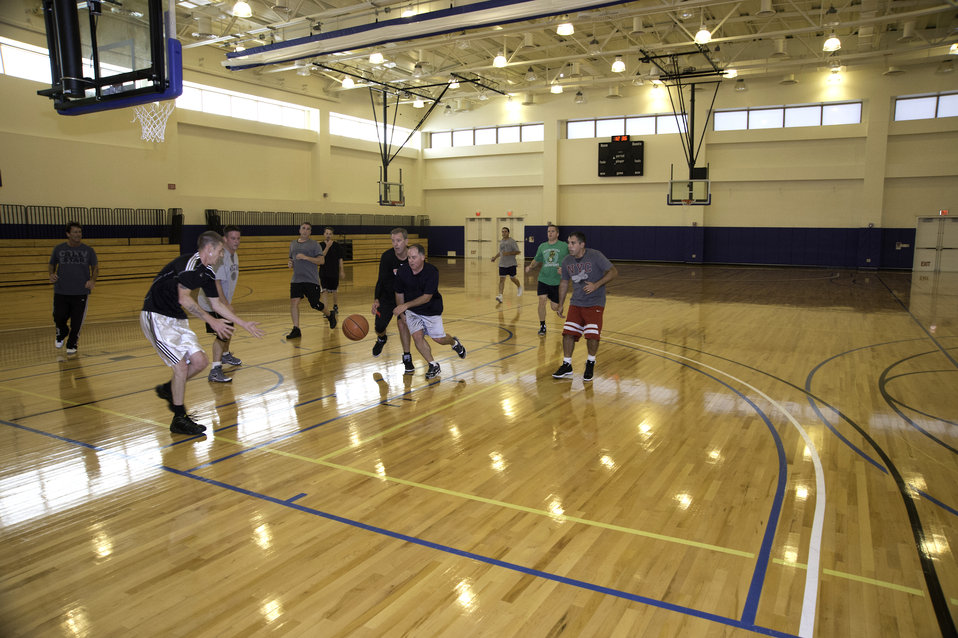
As part of the Mohegan Tribe’s Health and Wellness initiative, members of the Mohegan Tribe and employees of the Mohegan Tribal Government use the basketball court at the Mohegan Tribe Community Center and Government Building in Uncasville, CT on Nov. 18, 2013. A U.S. Department of Agriculture (USDA) Rural Development (RD) Community Facility Loan was provided to the Mohegan Tribe for the construction of the Mohegan Tribe Community Center and Government Building in Uncasville, CT. USDA’s RD Community Facilities Programs makes and guarantees loans to develop essential community facilities in rural areas and towns of up to 20,000 in population. Loans and guarantees are available to public entities such as municipalities, counties, parishes, boroughs, and special-purpose districts, as well as to non-profit corporations and tribal governments. The 160,000 square foot building Center hosts an exhibit celebrating federal recognition, history of Mohegan Chiefs, a new Library and Archives space, new Arts and Crafts room, a new gymnasium, and a new community room to enjoy food and family. The Center will continue the Tribe’s plan for growth and meeting the needs of its members.